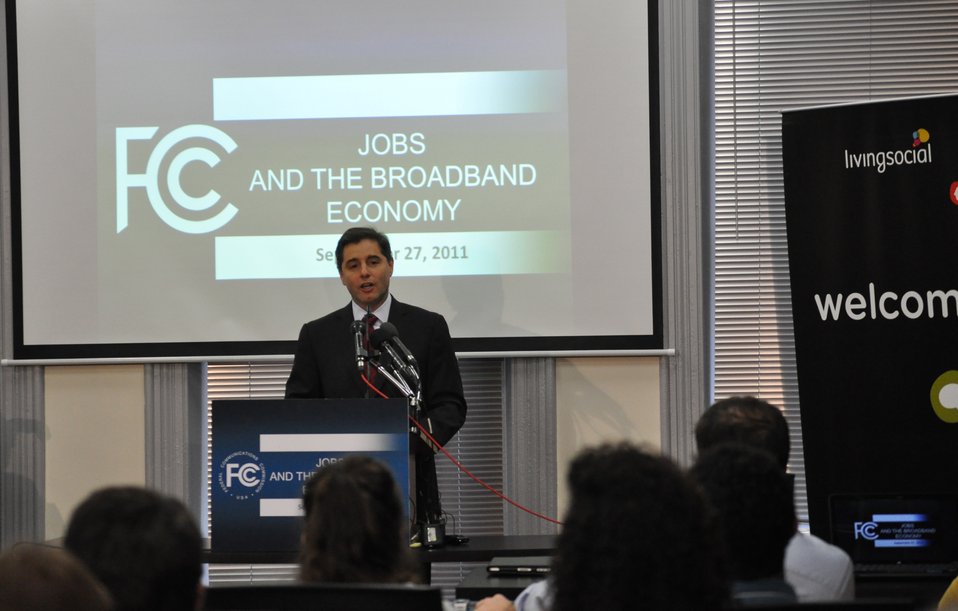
Jobs and the Broadband Economy

FCC Chairman Genachowski